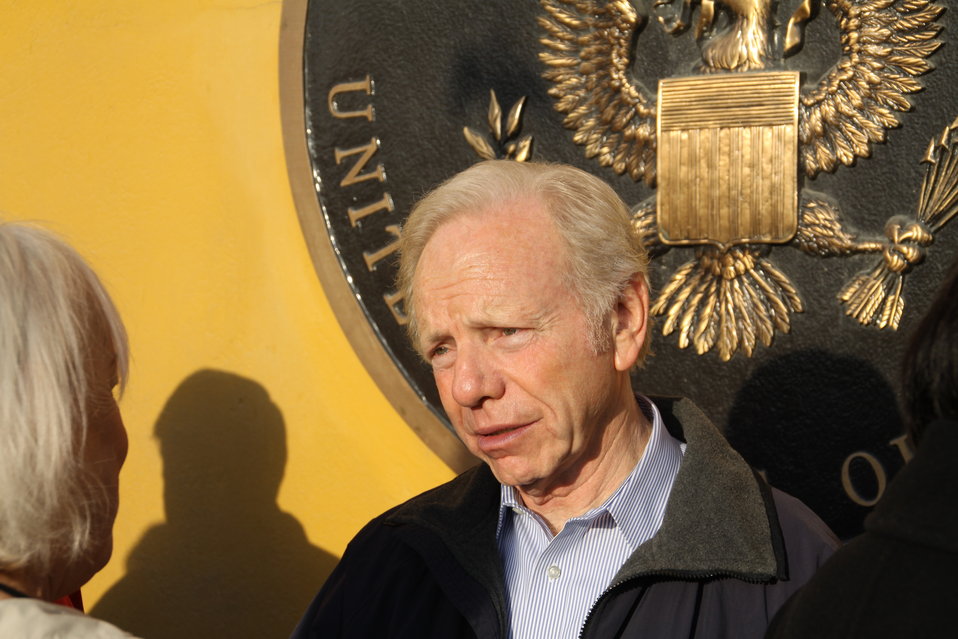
Senator Lieberman